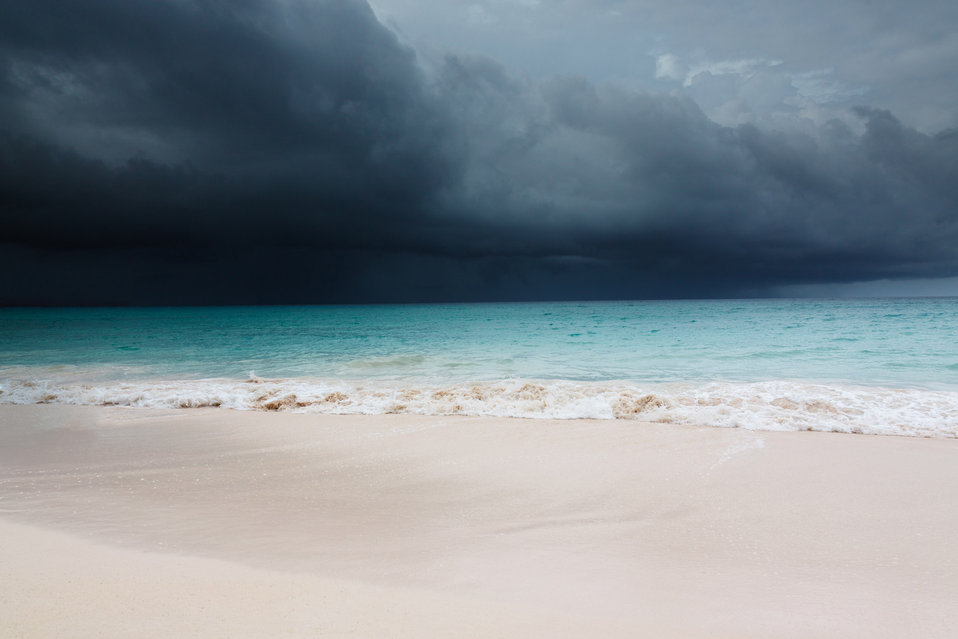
Tropical storm is coming at the barbados.